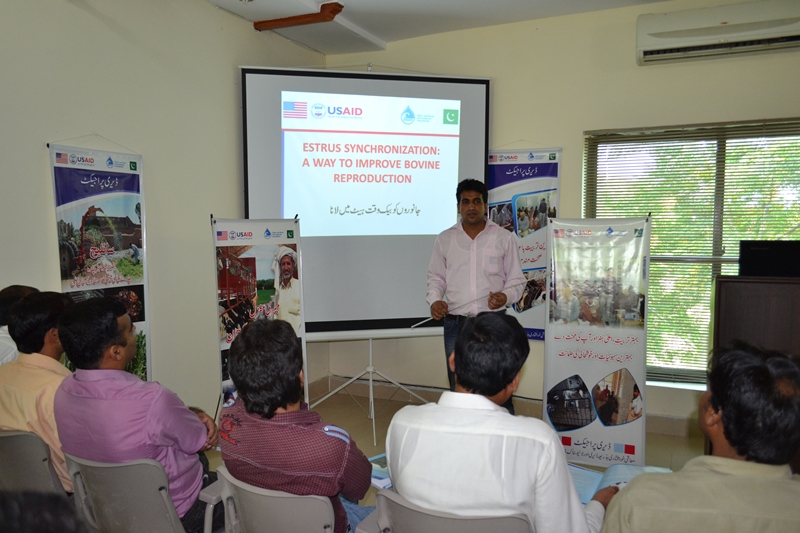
2 - First batch of Dairy Project farm manager trainees attending Farm Managers Training by USAId Dairy Project